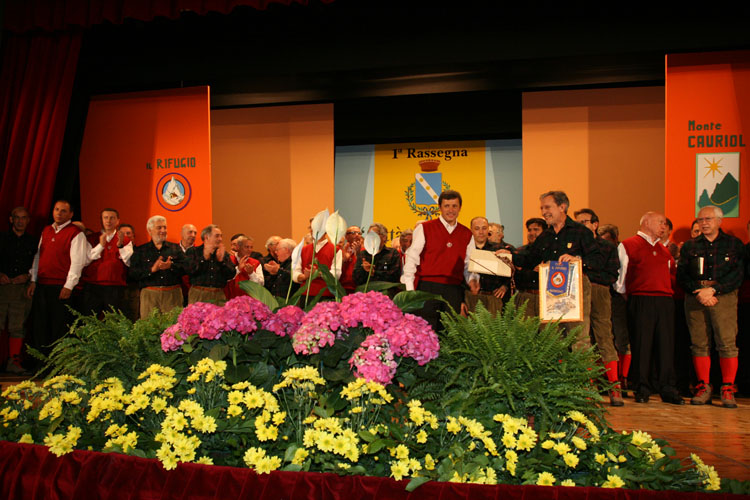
Italiano: 1a Rassegna di Canto Corale Popolare 'Citt√É† di Seregno', Cineteatro SantaValeria, Coro il Rifugio - Coro Monte Cauriol, 19 maggio 2007